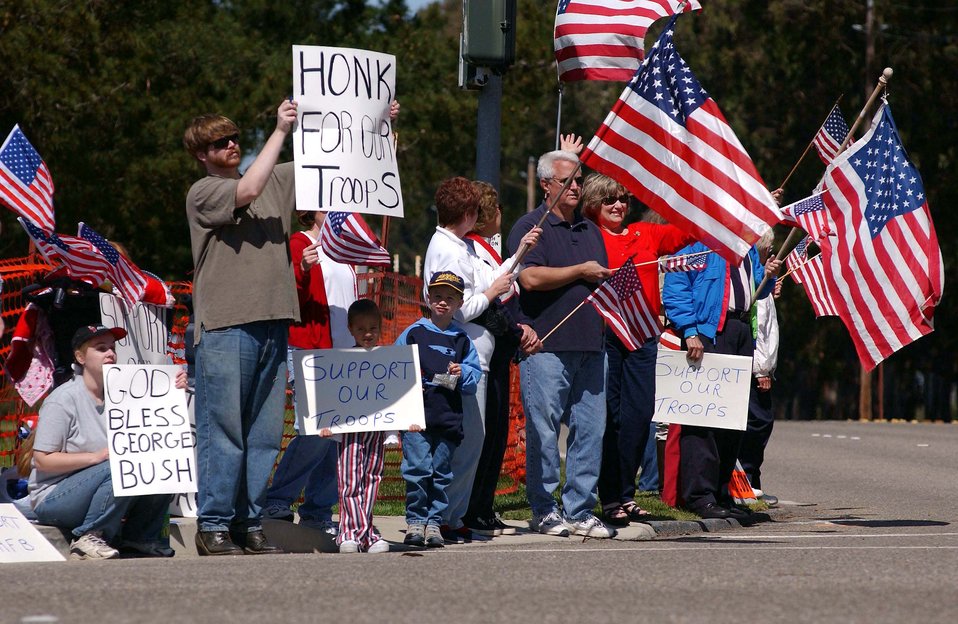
We support you

VANDENBERG AIR FORCE BASE, Calif. -- Pro-military demonstrators gather at Vandenberg's Santa Maria Gate Saturday to show their support for U.S. troops here and in Iraq.